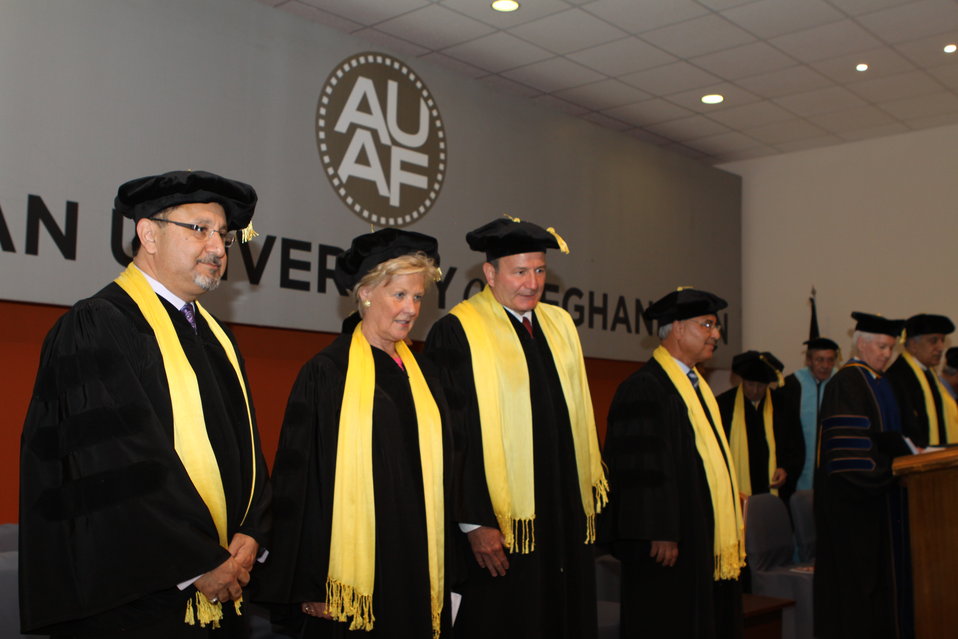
100526 AUAF Graduation 122